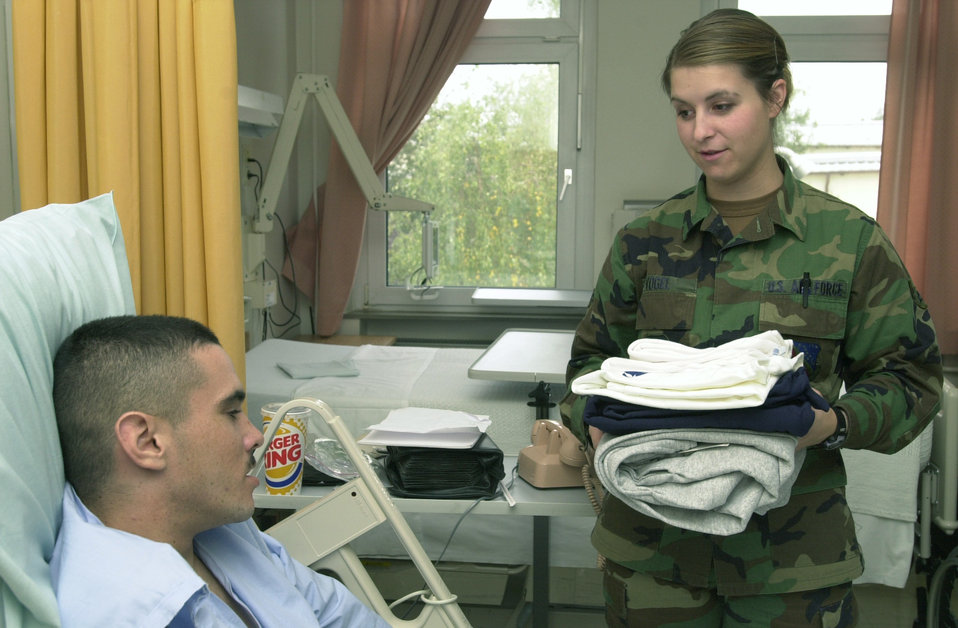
Guard chaplains minister to wounded troops

LANDSTUHL REGIONAL MEDICAL CENTER, Germany -- Airman 1st Class Karly Vogel, a chaplain assistant from the Minnesota Air National Guard, delivers new clothes to a U.S. Soldier here.